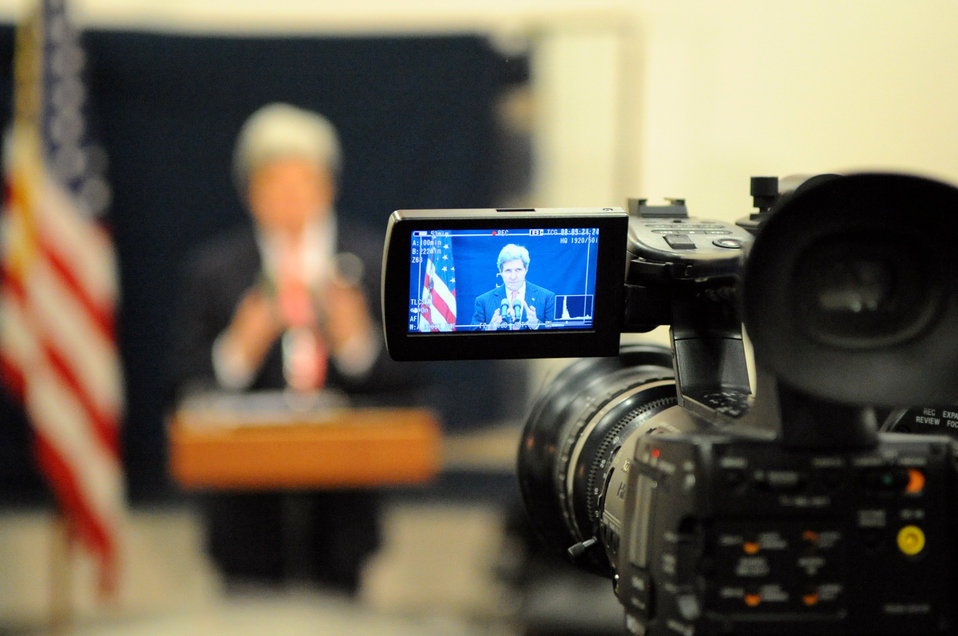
Secretary Kerry Addresses Reporters During a Tel Aviv News Conference

U.S. Secretary of State John Kerry is seen through a video viewfinder on December 13, 2013, as he addresses reporters during a news conference in Tel Aviv, Israel, that followed meetings with Israeli Prime Minister Benjamin Netanyahu and Palestinian Authority President Mahmoud Abbas.